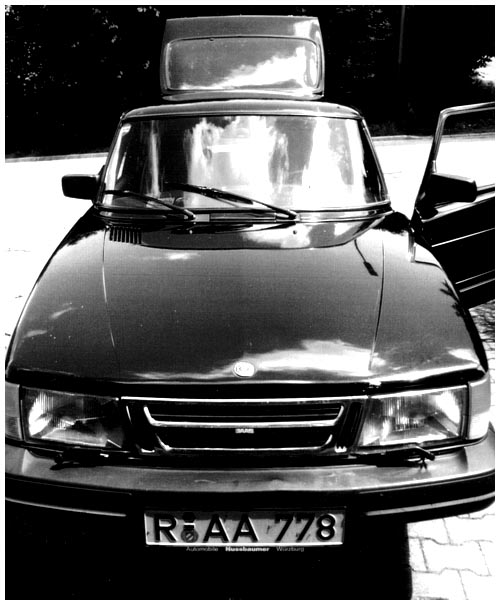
Saab 900 bj 88 2.0